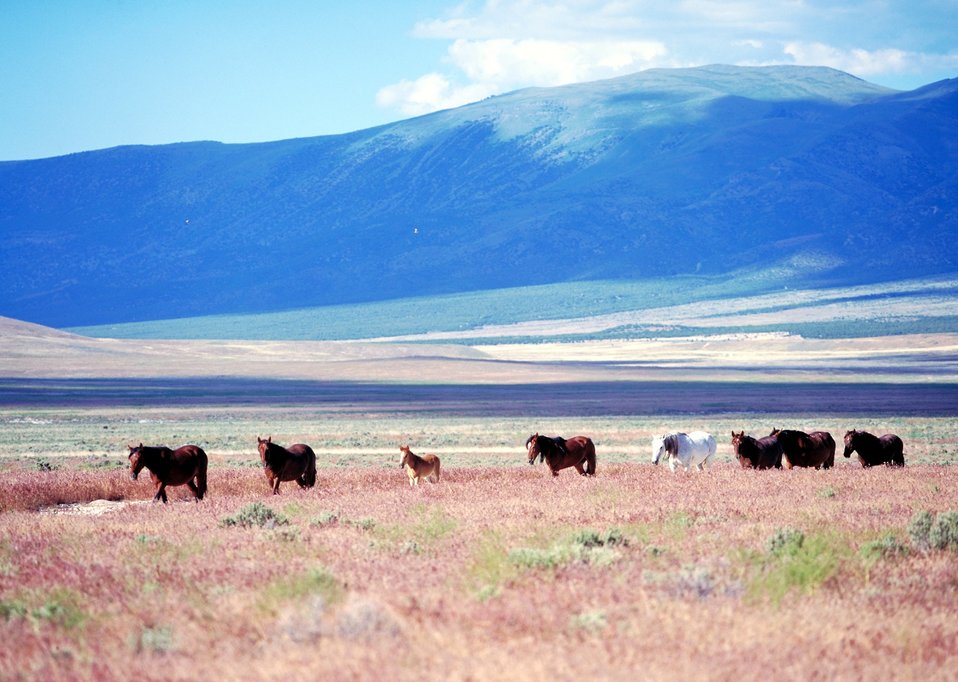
Onaqui Herd near Dugway, Utah.